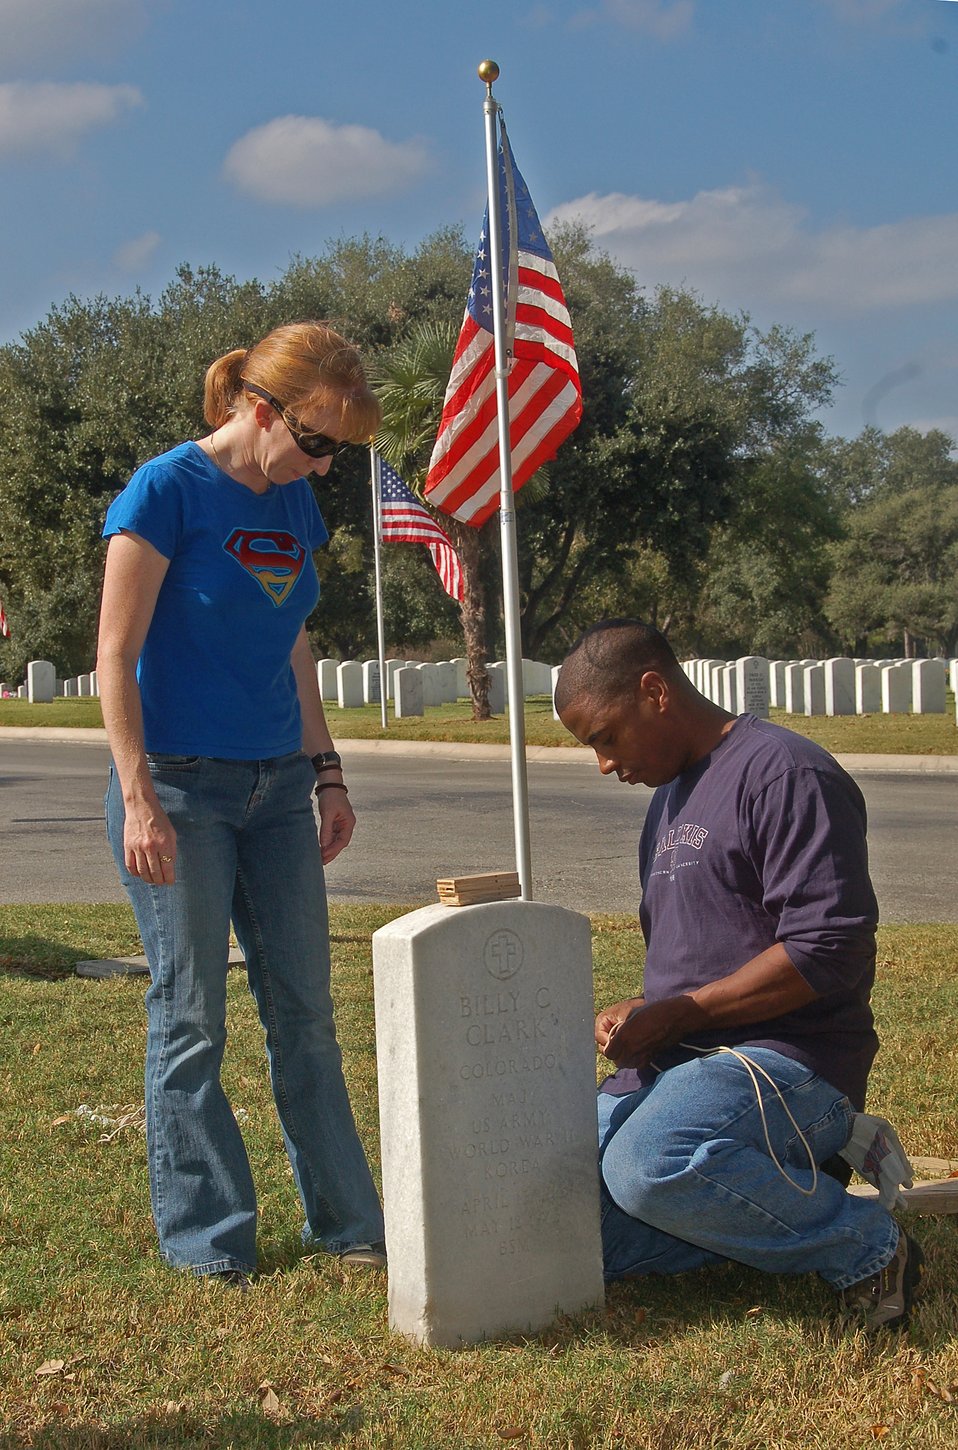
Airmen show respect to fallen servicemembers through community service

Capt. Shannon Collins and Master Sgt. Reiko Meeks prepare to realign a grave marker Nov. 9 at the Fort Sam Houston National Cemetery in San Antonio. Airmen volunteered to reset the grave markers to honor fallen heroes for Veterans Day. Both are assigned to the Air Force News Agency.